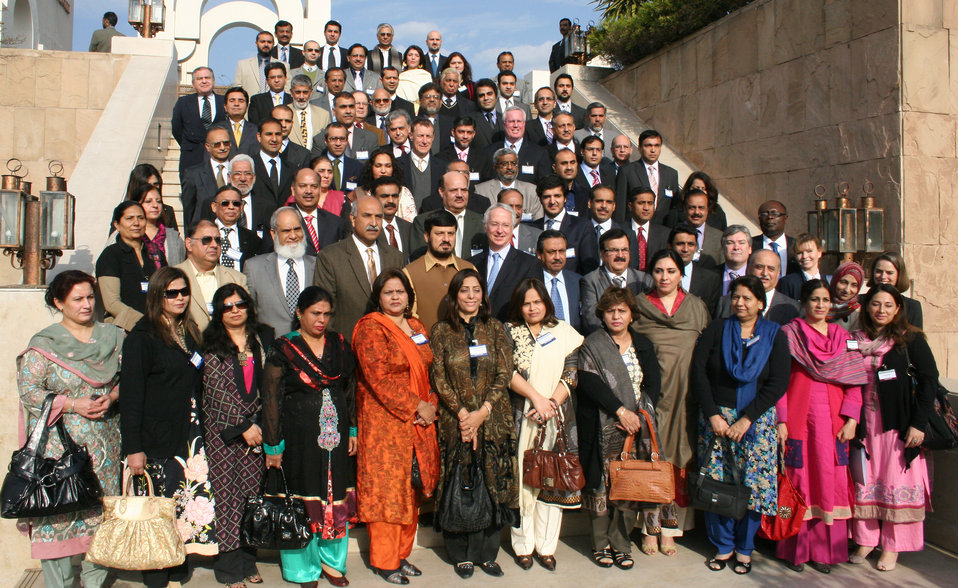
Trade Growth

Islamabad, January 13, 2011 - U.S. Ambassador Cameron Munter with prominent businessmen from across Pakistan after addressing a two-day roundtable sponsored by the U.S. Agency for International Development on designing and implementing trade reform.